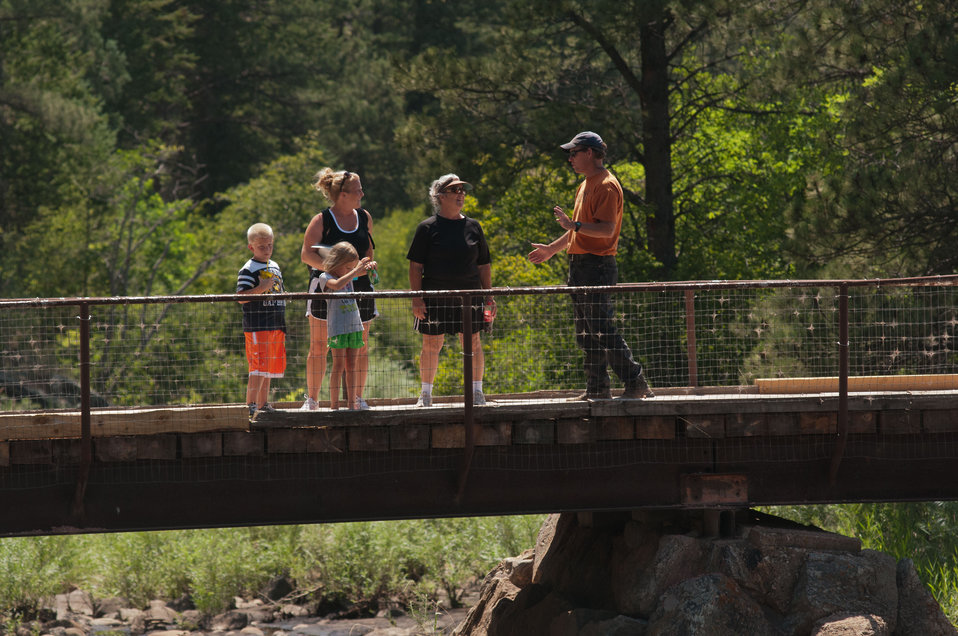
U.S. Department of Agriculture District Conservationist Todd Boldt, orange shirt, talks with Jackson, Alison and Amy Temples, and Patty Jackson, three generations of a family, walking across the bridge to see the effects of the Hewlett Gulch Fire, in the Poudre Canyon area, on Friday, July 20, 2012, near Fort Collins, Colorado. “Talking with people is one of the most important things I do. By talking with them, they will talk to maybe 50 others,“ said Todd Boldt. “Explaining the effects of the fire and the steps that the City of Greeley and USDA are doing, go a long way to educate the public.” Unmitigated runoff have turned the water in this river from clear water to nearly black water heavily laden with ash, silt, and burnt debris that recent thunderstorms have already washed down from the mountainsides. When he dug down into the riverbanks, he found ash 18 inches below the surface, at the water’s edge. At its peak more than 400 firefighters were battling fires pushed by 50 mph winds. When the last embers were cooled, more than 12-square miles lay blacked at a cost of approximately 3.2 million dollars to fight. The aerial distribution of straw has successfully kept nearby Seaman Reservoir clean for the drinking water of the City of Greeley. Forest Service lands receive straw, while private and other lands receive a seed mix and straw to promote ground cover plant growth on ash-covered lands. In total, 1,800 tons of straw will be applied during the 14-day operation. One quarter of the cost was paid by the City of Greeley and the U.S. Department of Agriculture funded the remainder.